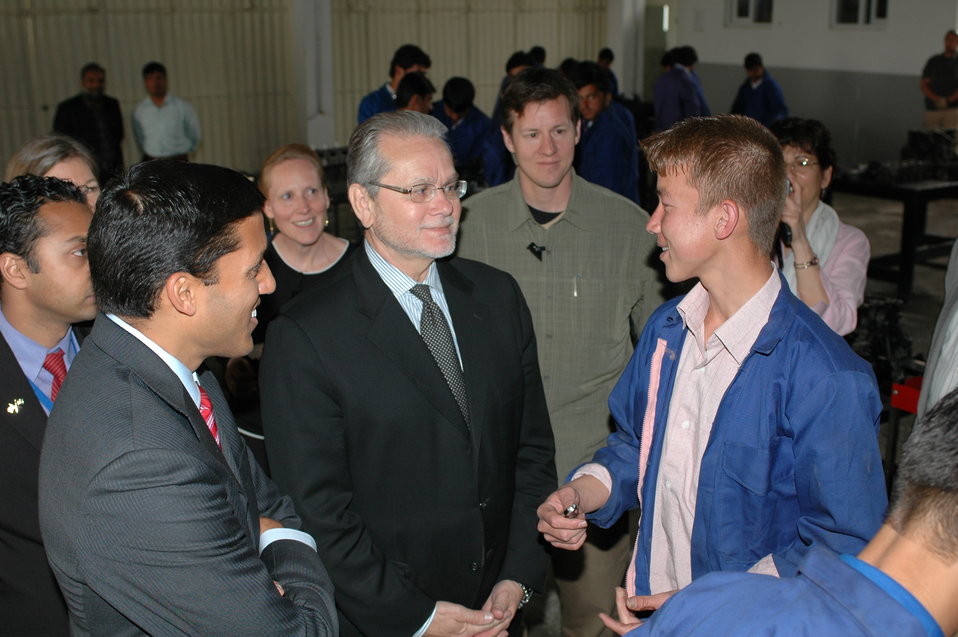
Dr Shah Visits Votech in Kabul